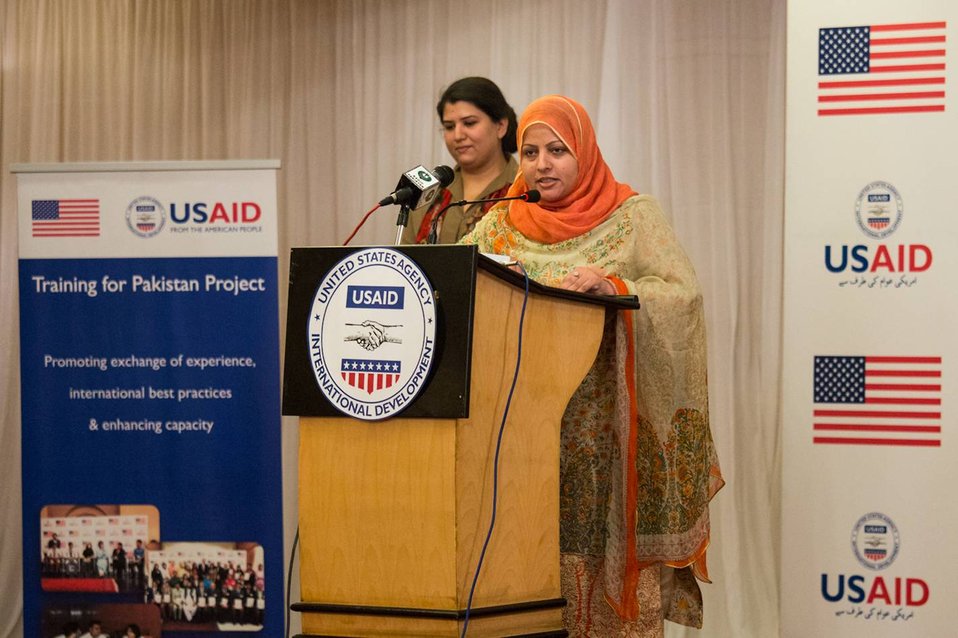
Islamabad, September 26 2012 - A participant talks about her experience in the program.